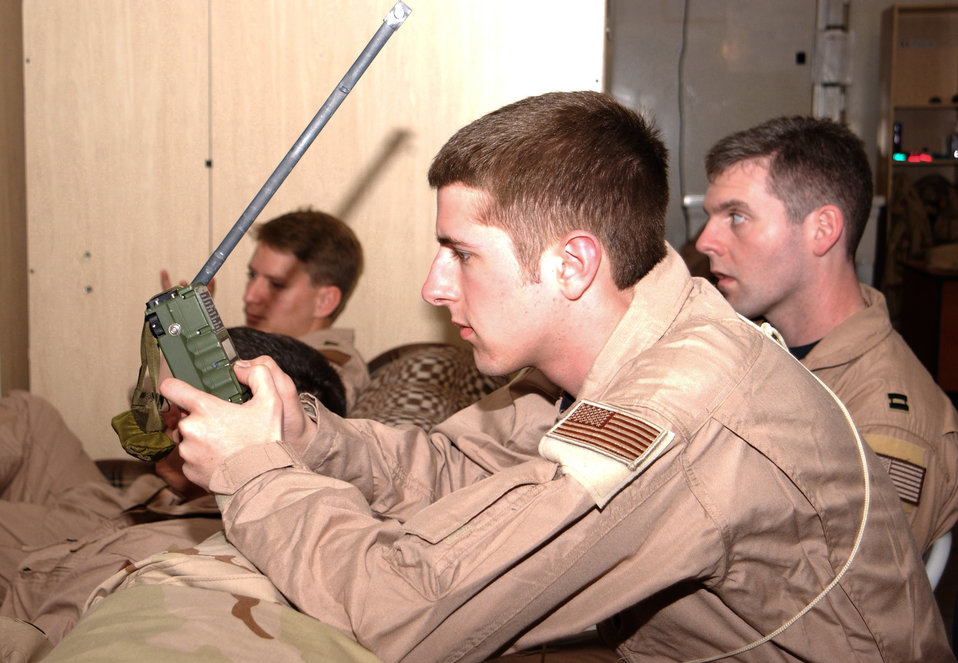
Preparing for worst-case scenario

MANAS AIR BASE, Kyrgyzstan -- Airman 1st Class David Thoresen reviews the operation procedures for a survival radio. Airman Thoreson and his fellow KC-135 Stratotanker aircrew members were attending a class on survival techniques and threats specific to the area. Airman Thoresen is a boom operator with the 22nd Expeditionary Air Refueling Squadron here.